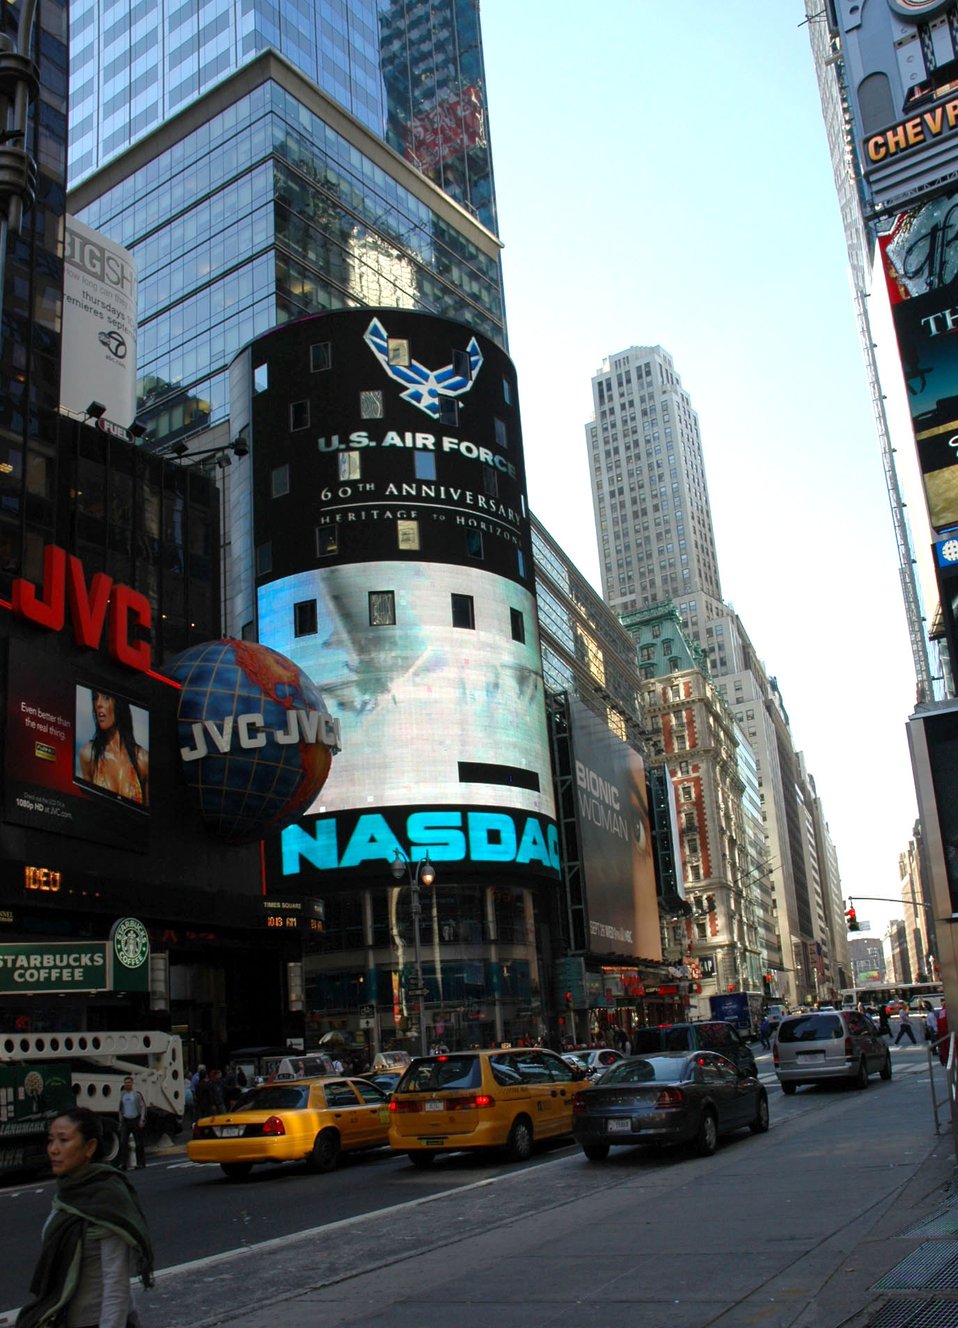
New York City salutes Air Force's birthday

New York City offers the Air Force a 60th birthday salute in Times Square Sept. 18, courtesy of the Nasdaq stock market and Reuters news service. The companies displayed the Air Force graphics throughout the day to mark the occasion.